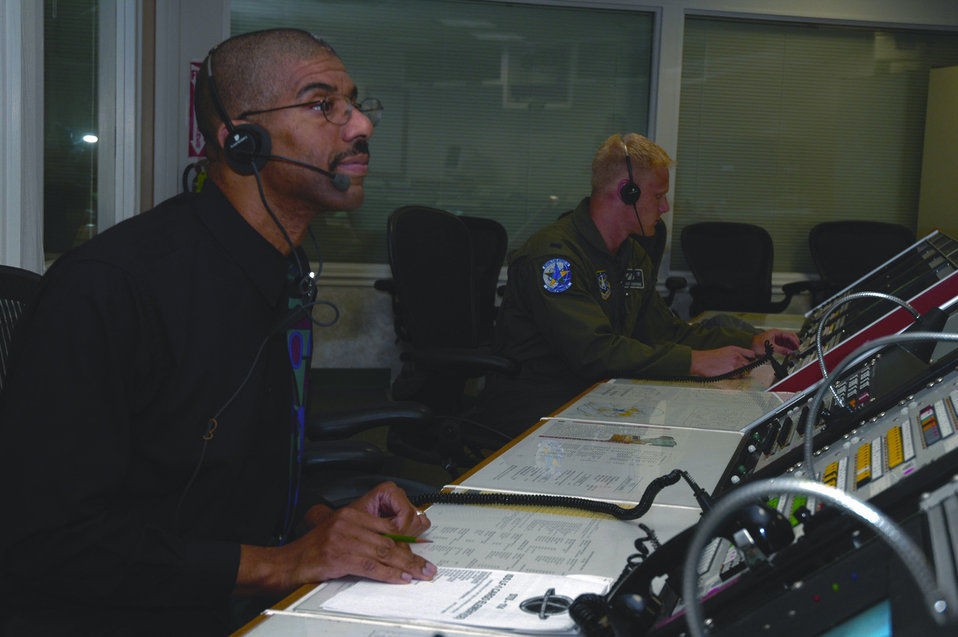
Vandenberg aids in Discovery landing

VANDENBERG AIR FORCE BASE, Calif. -- Wesley Fleming and 1st Lt. David Rodriguez pull an all-nighter at the Western Range Control Center here Aug. 9 to ensure the successful landing of the Space Shuttle Discovery. Mr. Fleming is a mission control supervisor, and Lieutenant Rodriguez is a 2nd Range Operations Squadron range control officer.